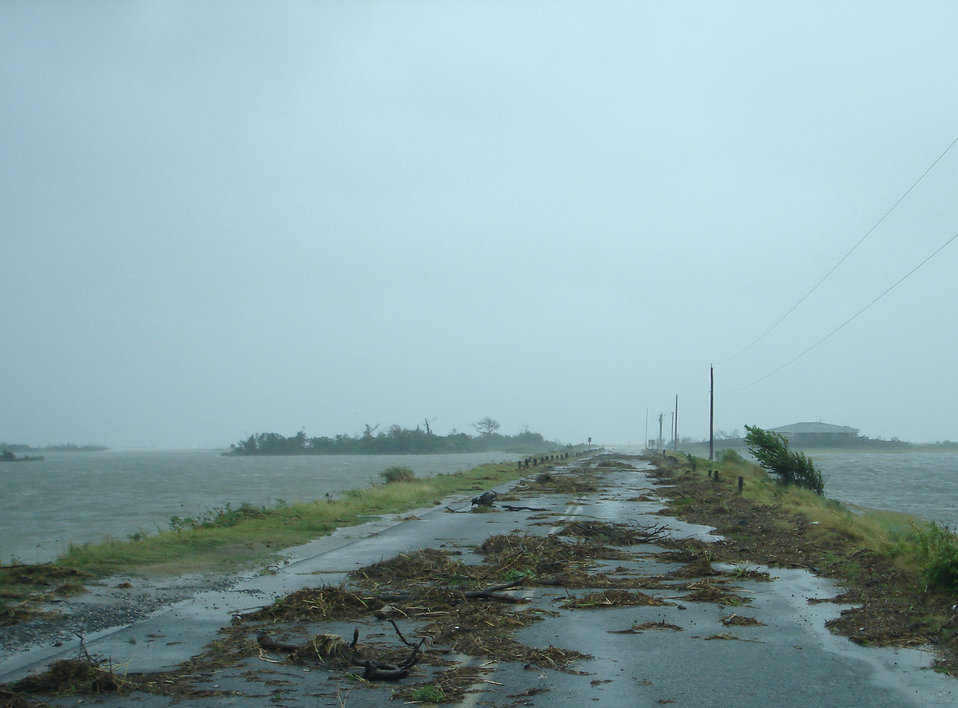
Debris on Beach Road at Chincoteague National Wildlife Refuge in Virginia after Hurricane Irene.